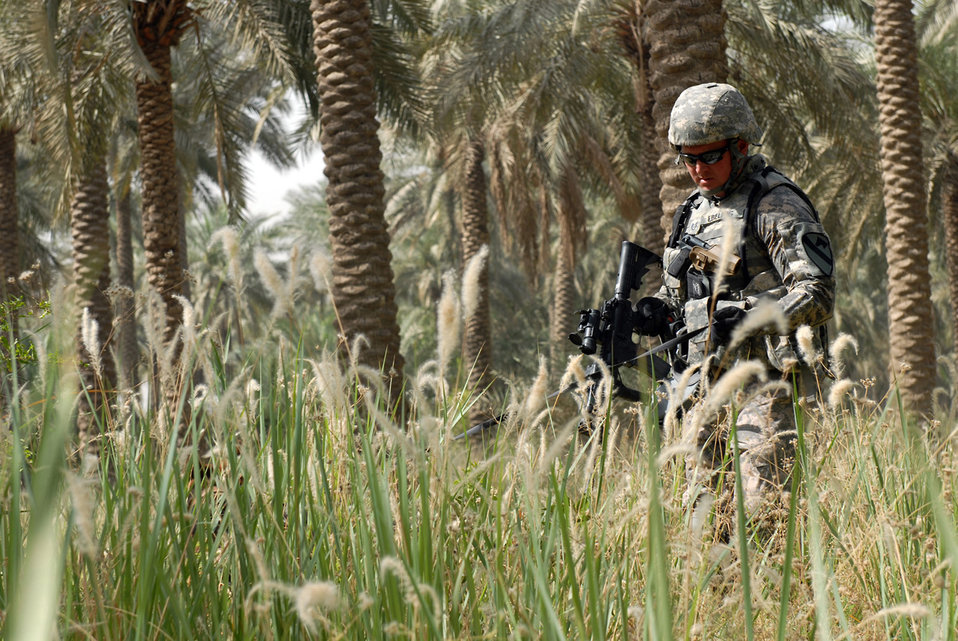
Military working dogs supplement sweep operation

Air Force Staff Sgt. Christopher Ebeling, a military working dog handler assigned to the provost marshall's office at Camp Victory in Baghdad, and his German Shepherd, Nero, navigate through a palm grove in nearby Al Doura during a clearing mission June 13 with Soldiers from the North Carolina National Guard's Company A, 252nd Combined Arms Battalion, 30th Heavy Brigade Combat Team. Sergeant Ebeling, from the 732nd Expeditionary Security Forces Squadron at Ellsworth Air Force Base, S.D., is on his third tour in Southwest Asia and has been in the military for 12 years.